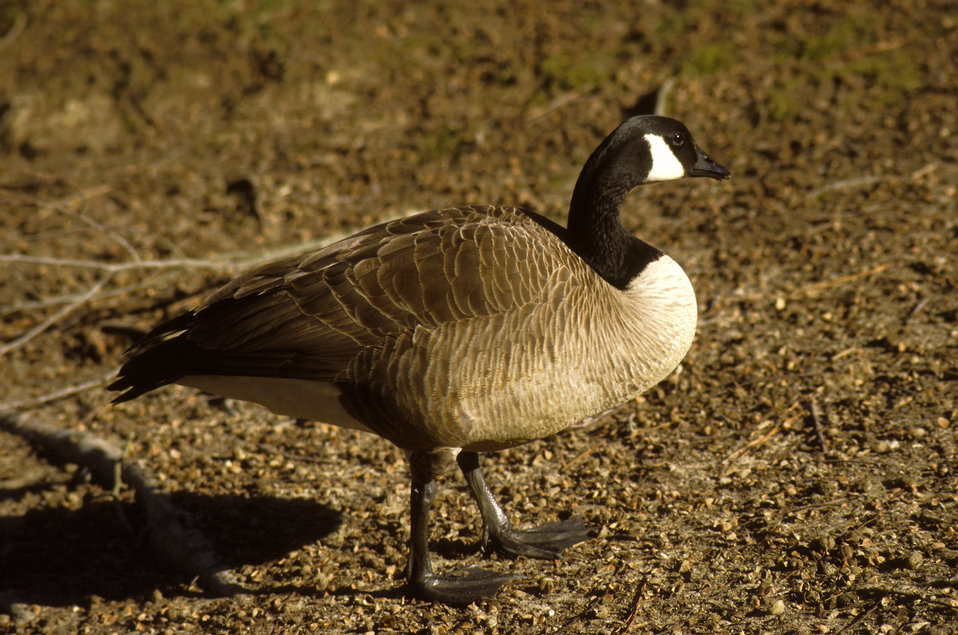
Canada Goose

A profile view of a Canada Goose.